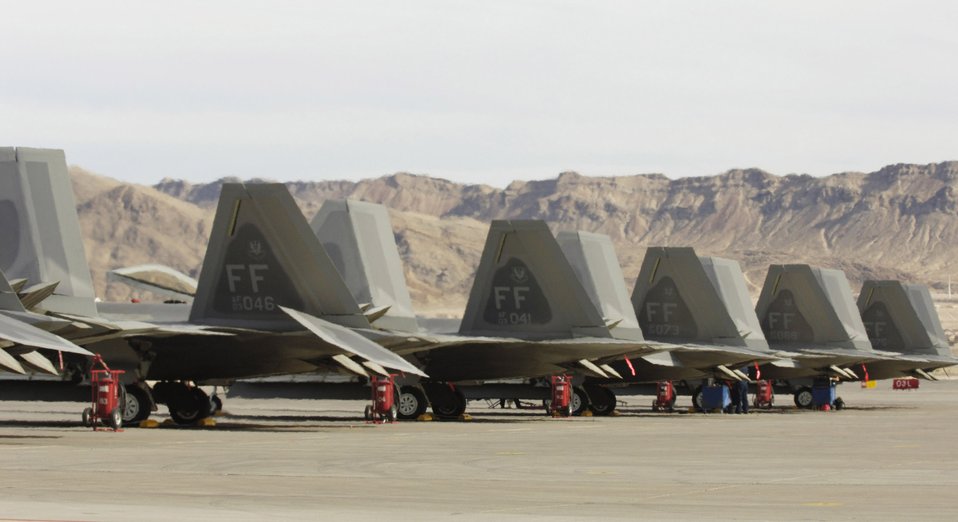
Raptors invade Nevada

F-22 Raptors are parked on the flightline during Red Flag 07-02 Feb. 6 at Nellis Air Force Base, Nev. Red Flag sharpens aircrews' warfighting skills in realistic combat situations. The aircraft from 94th Fighter Squadron of Langley Air Force Base in Virginia will be flying missions during the day and night to the nearby Nevada Test and Training Range where they will simulate an air war. The Air Force and Navy, along with military forces from Australia and the United Kingdom, are participating in Red Flag. This is the first deployment to Red Flag for the 94th FS with F-22.